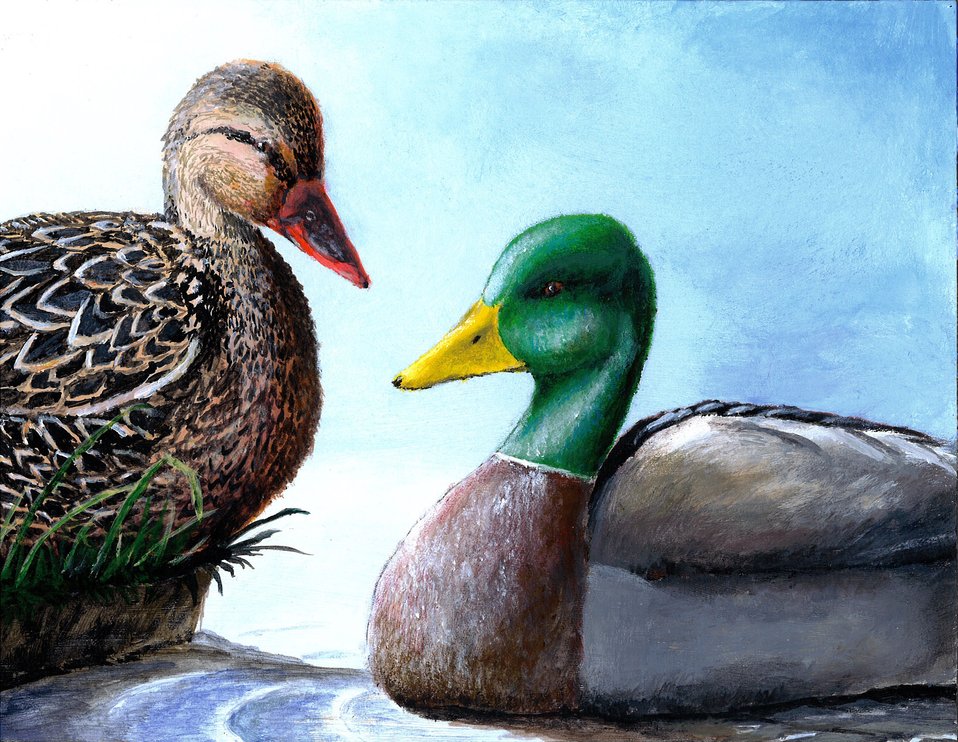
WestVirginia

2012 Jr Duck Stamp Program
State Best of Show
West Virginia